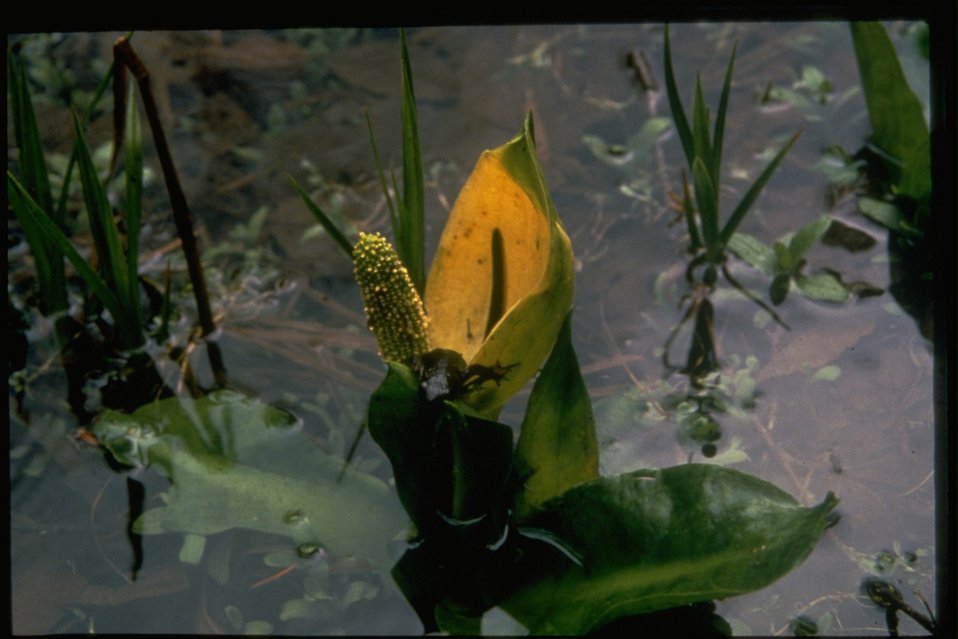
Skunk Cabbage.